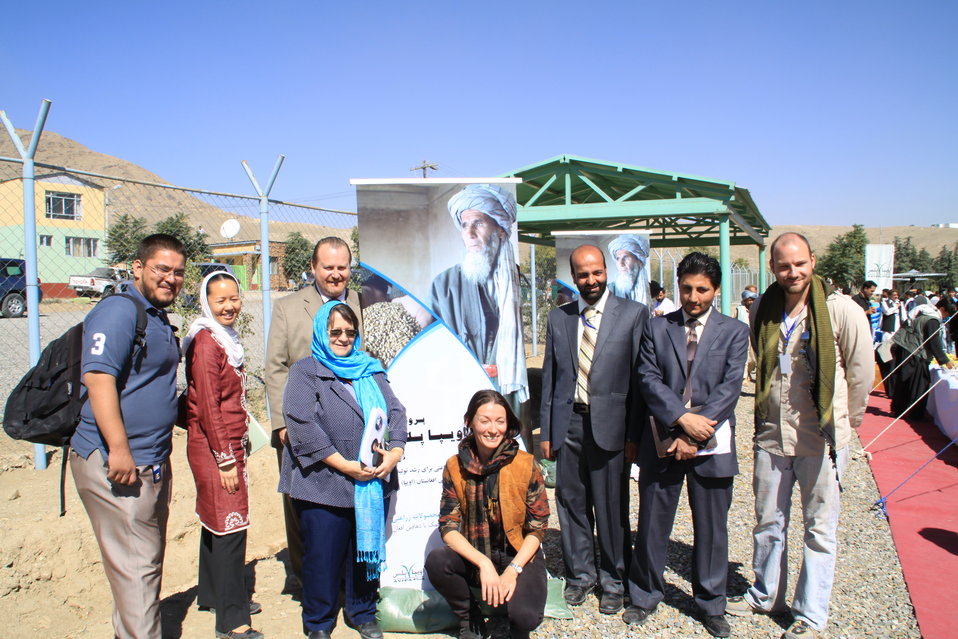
AVIPA Plus Wheat Seed Distribution 101005

US Ambassador Karl Eikenberry and USAID Acting Mission Director Kevin Brownawell joined the Minister of Agriculture, Irrigation and Livestock, H.E. Minister Mohammed Rahimi in signing a Memorandum of Understanding and distributing vouchers to area farmers for wheat and fertilizer.

US Ambassador Karl Eikenberry and USAID Acting Mission Director Kevin Brownawell joined the Minister of Agriculture, Irrigation and Livestock, H.E. Minister Mohammed Rahimi in signing a Memorandum of Understanding and distributing vouchers to area farmers for wheat and fertilizer.

US Ambassador Karl Eikenberry and USAID Acting Mission Director Kevin Brownawell joined the Minister of Agriculture, Irrigation and Livestock, H.E. Minister Mohammed Rahimi in signing a Memorandum of Understanding and distributing vouchers to area farmers for wheat and fertilizer.